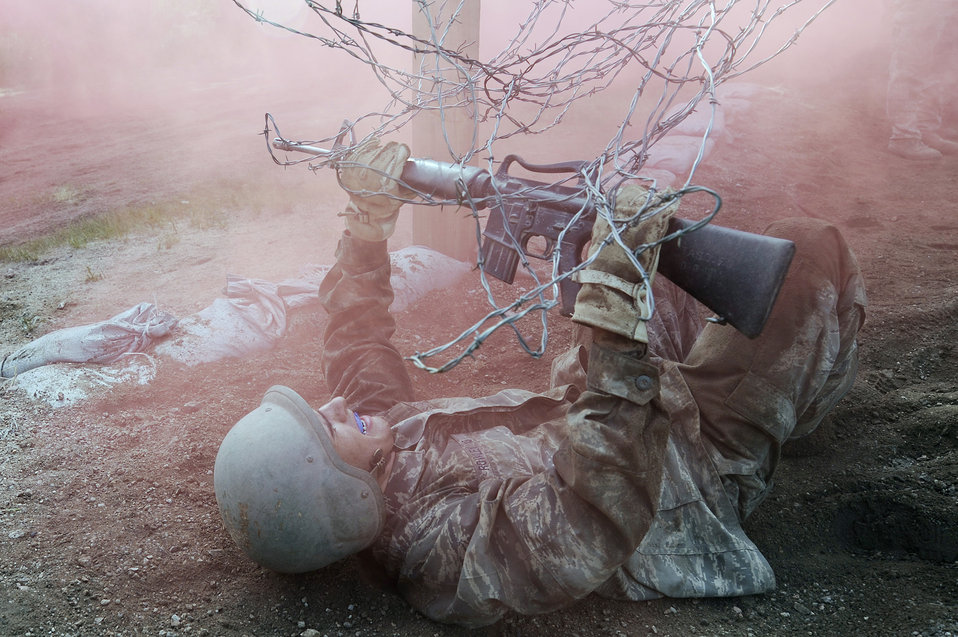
Academy basic field training at Jacks Valley

Air Force Academy Basic Cadet Evan Rowley crawls under barbed wire in the Jacks Valley Assault Course July 21 near Colorado Springs, Colo. Basic cadet training started June 25 and continues through Aug. 1.